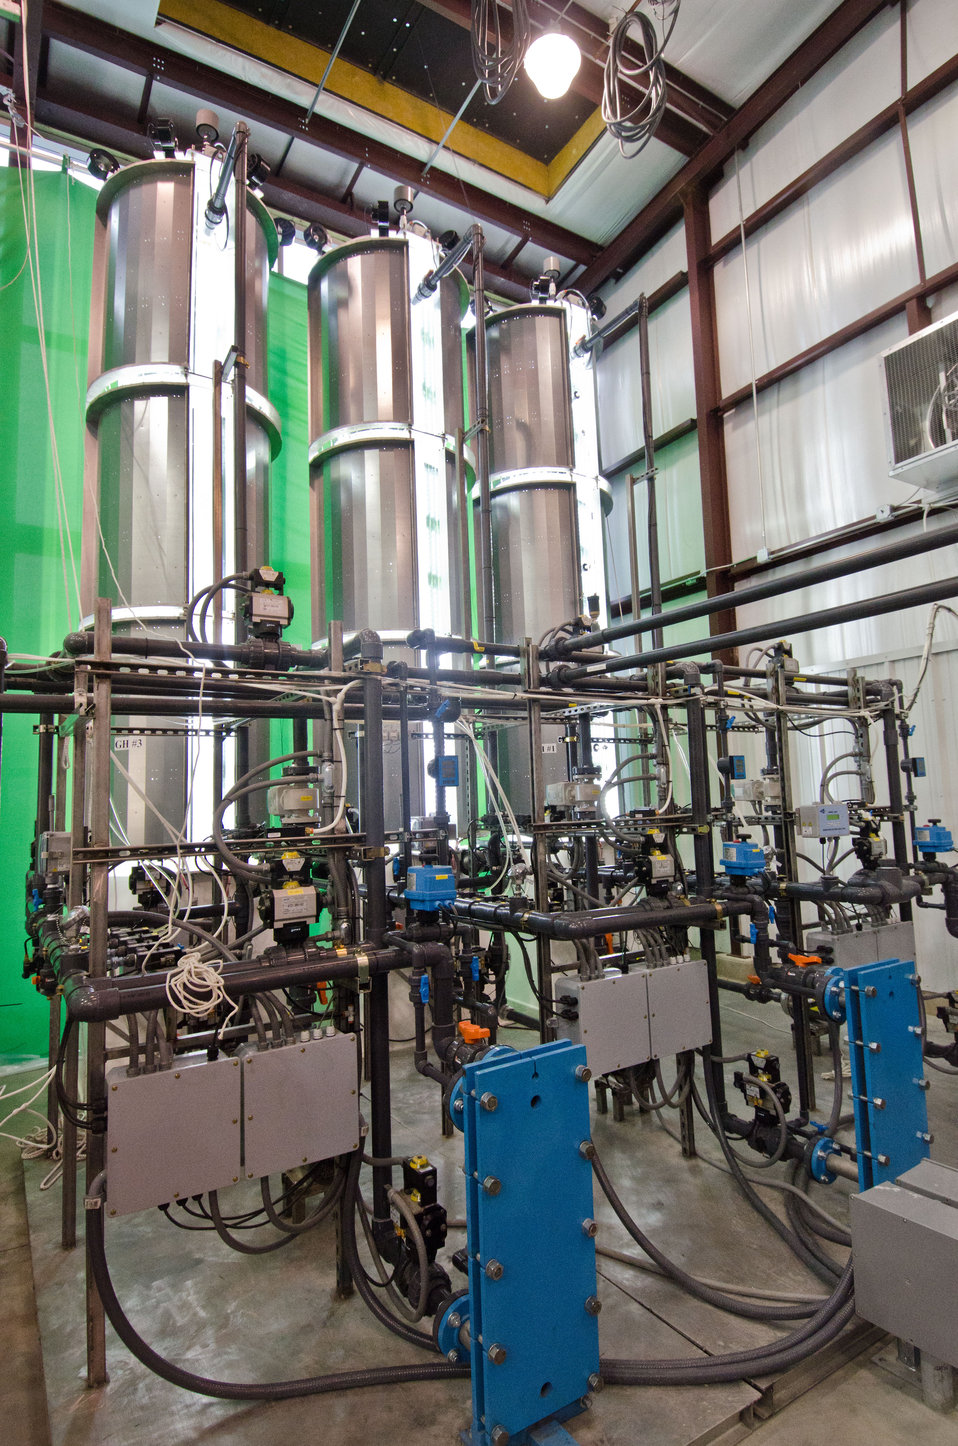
Phase II of the BioProcess Algae facility at Green Plains Renewable Energy (GPRE), Inc. on Friday, April 15, 2011 in Shenandoah, IA. Phase II is key component in the commercial scale photo bioreactors/harvesters. The operation is co-located within GPRE’s ethanol factory where BioProcess Algae technology is used to treat waste products; carbon dioxide, recycled heat and water to mass-produce algae. Algae from this facility are used for animal feeds, pharmaceutical and beauty products.